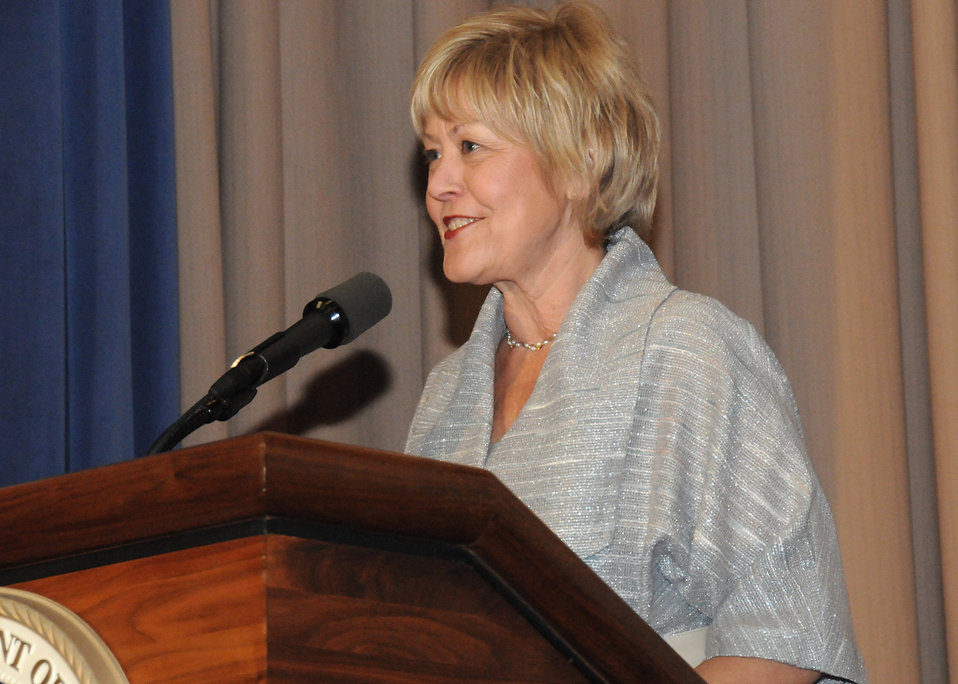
Mrs. Christie Vilsack, wife of Agriculture Secretary Tom Vilsack was the keynote speaker at the Women and Working Lands: Past, Present, Future conference held in the Jefferson Auditorium at the Department of Agriculture in Washington, D. C., on Thursday, Mar. 25, 2010. USDA photo 10di1283-78